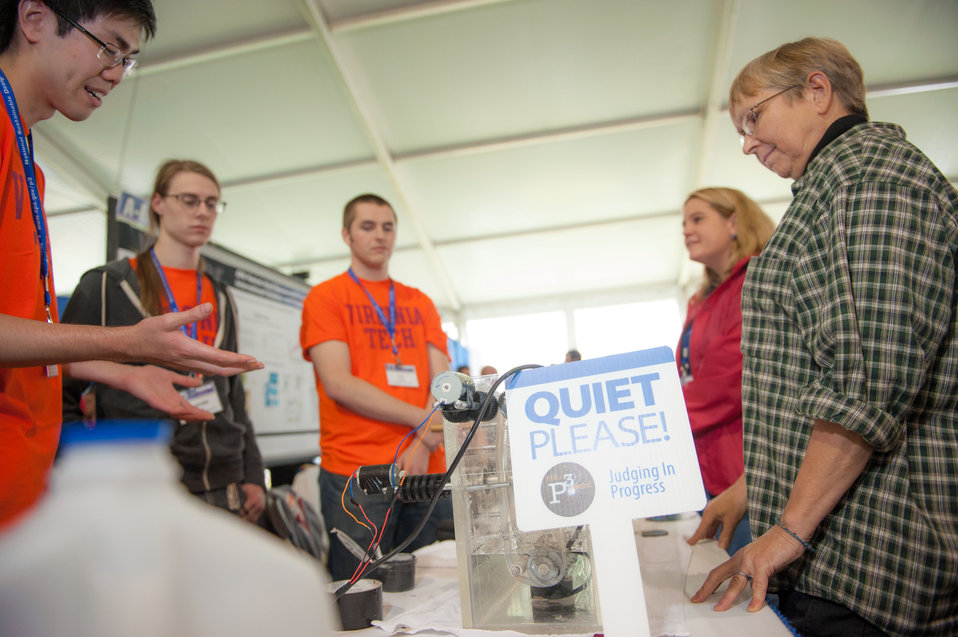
April 18, 2013 - P3 Design Expo, Virginia Tech

A team from the Virginia Polytechnic Institute and State University (Virginia Tech) have devised a way to wash eggs. Miniature Bubbles Make Your Food Safe!
This team designed and demo their prototype of a sustainable egg-washer used on small-scale farms.

VTech Egg team’s P3 page
VTech Egg Team’s Facebook Page

People Prosperity and the Planet: National Sustainable Design Expo on the National Mall 18-19 April 2013